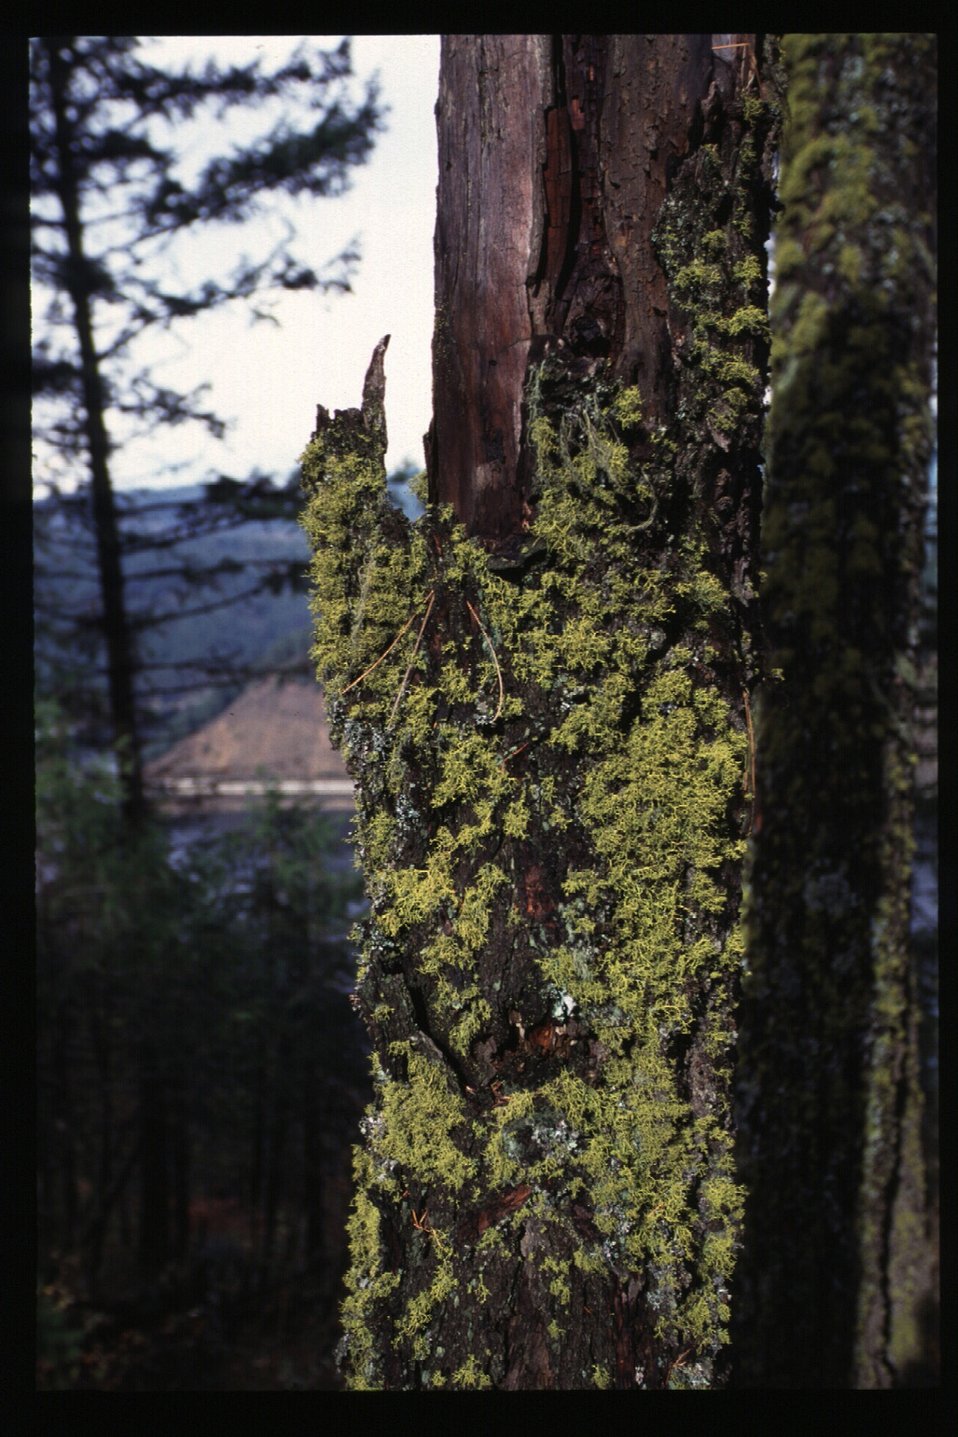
Mineral Ridge Trail Couer d'Alene UCSC Upper Columbia Salmon Clearwater District